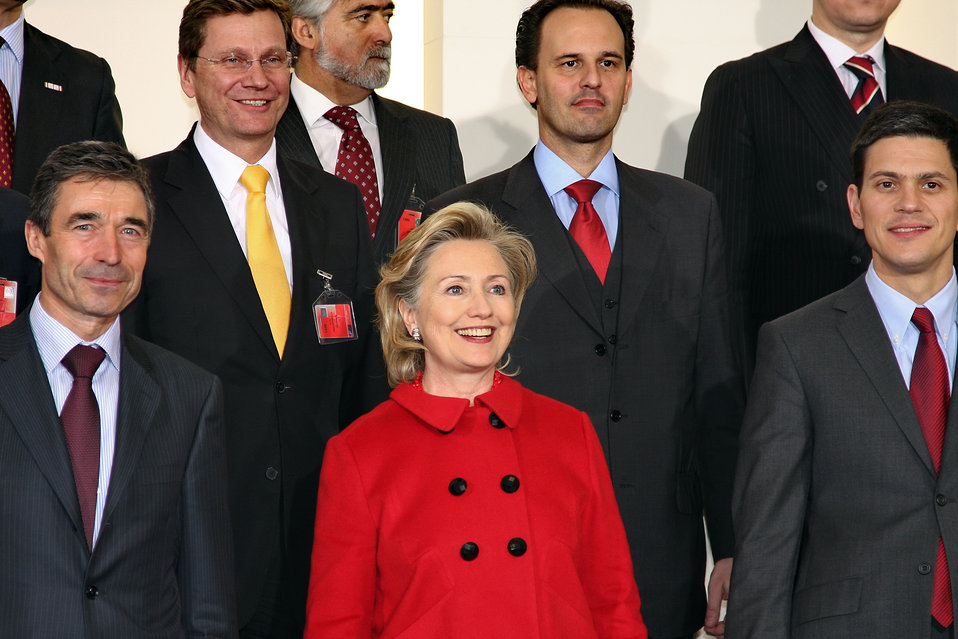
Official Portrait at NATO Headquarters

U.S. Secretary of State Hillary Rodham Clinton poses for an official portrait at the conference hall of NATO headquarters in Brussels, Belgium December 4, 2009.